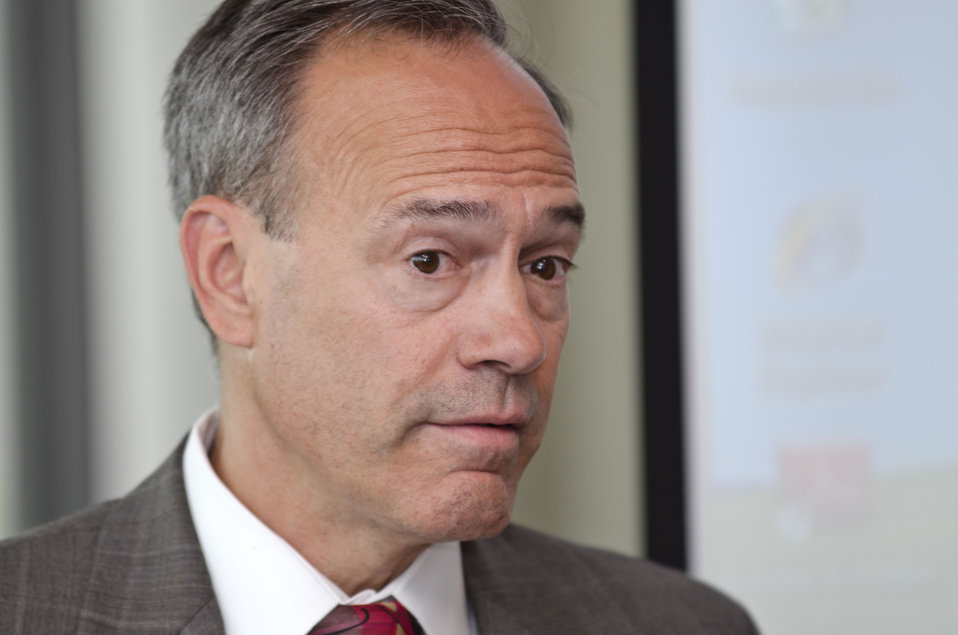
U.S. Department of Agriculture (USDA) Grain Inspection, Packers and Stockyards Administration (GIPSA) Deputy Administrator Alan Christian speaks during the first business meeting of USDA’s Council for Native American Farming and Ranching (CNAFR) held at the National Museum of the American Indian in Washington, D.C. on Tuesday, Aug. 14, 2012. CNAFR was created to advise the Secretary on ways to eliminate barriers to participation for Native American Farmers and Ranchers in USDA programs. The Council was established as part of the Keepseagle settlement, and is conducted under the oversight of USDA's Office of Tribal Relations under the Office of the Secretary of Agriculture.